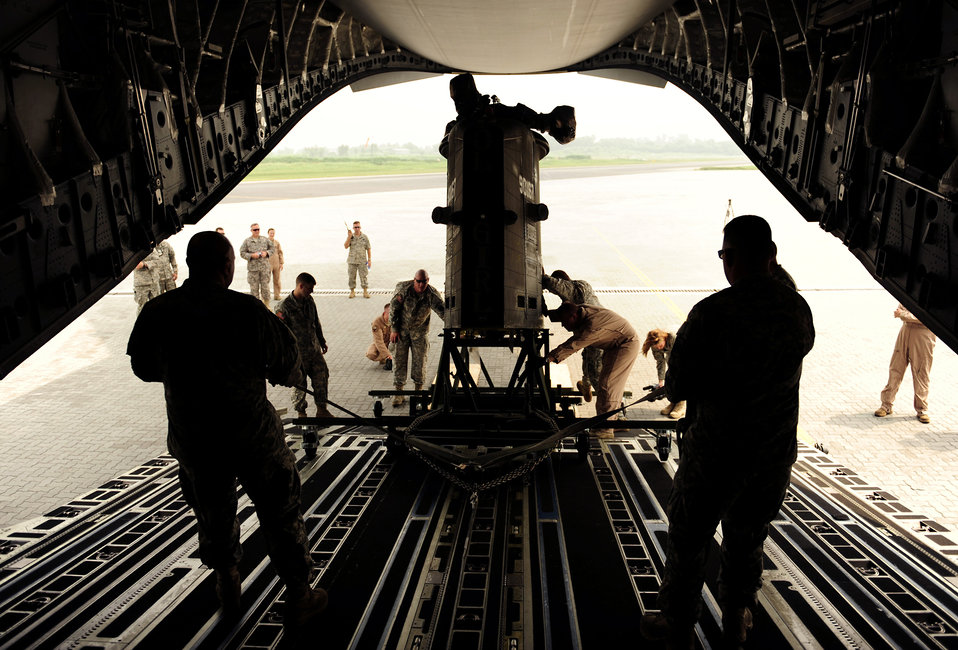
Slow and steady

Airmen at Chakala Air Force Base, Pakistan, unload a CH-47 Chinook helicopter Sept. 2, 2010, from a C-17 Globemaster III aircraft assigned to the 535th Airlift Squadron at Hickam Air Force Base, Hawaii. The helicopter will be used to support flood relief efforts.